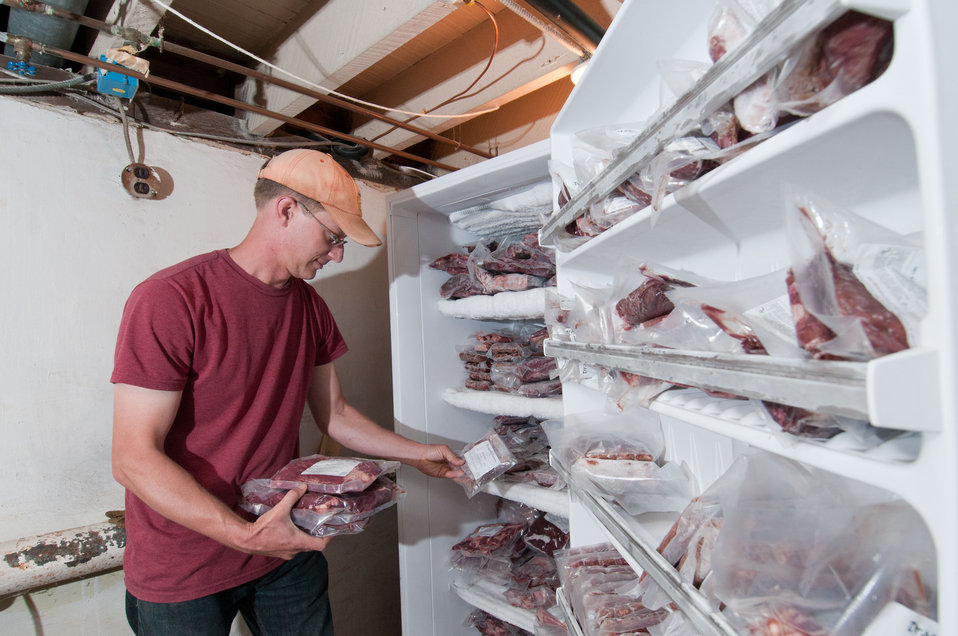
Bruce Johnson, owner of the Dragonfly Farm inventories beef that was produced from his free-range, grass-fed, and very stress-free cattle in Beaverdam, VA, on Friday, May 6, 2011. Dragonfly and other farms produce meat products that are listed and ordered on Lulus Local Food website. The products are distributed with the help of other suppliers participating with Fall Line Farms Food Hub. Together, they offer a wide variety of household food staples and specialty items. Members pick their customized orders from an ever changing seasonal inventory of fruits, vegetables, meats, soaps, eggs, cheeses, flowers, honey, pastas, sauces, syrups, baked goods, mushrooms, flour and grains from the Richmond, VA area.